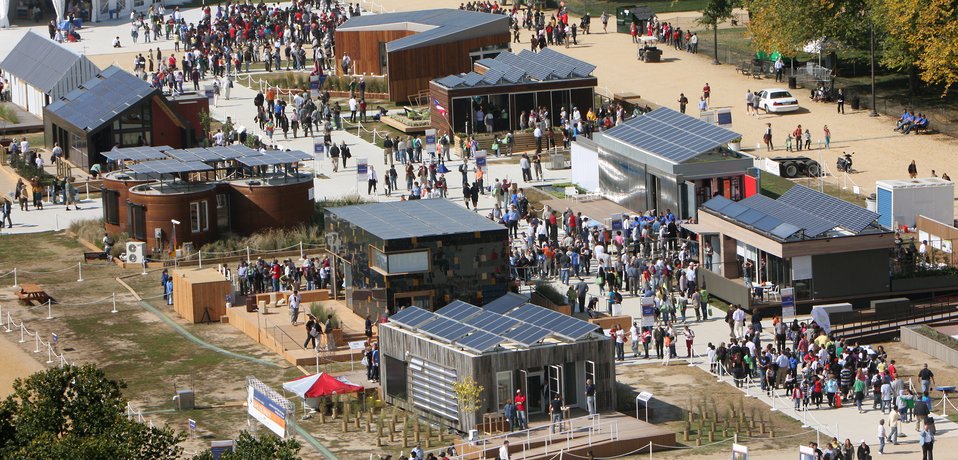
The public tours the international U.S. Department of Energy Solar Decathlon, featuring energy efficient, solar-powered houses building by 20 university teams from North America and Europe on the National Mall in Washington, DC.